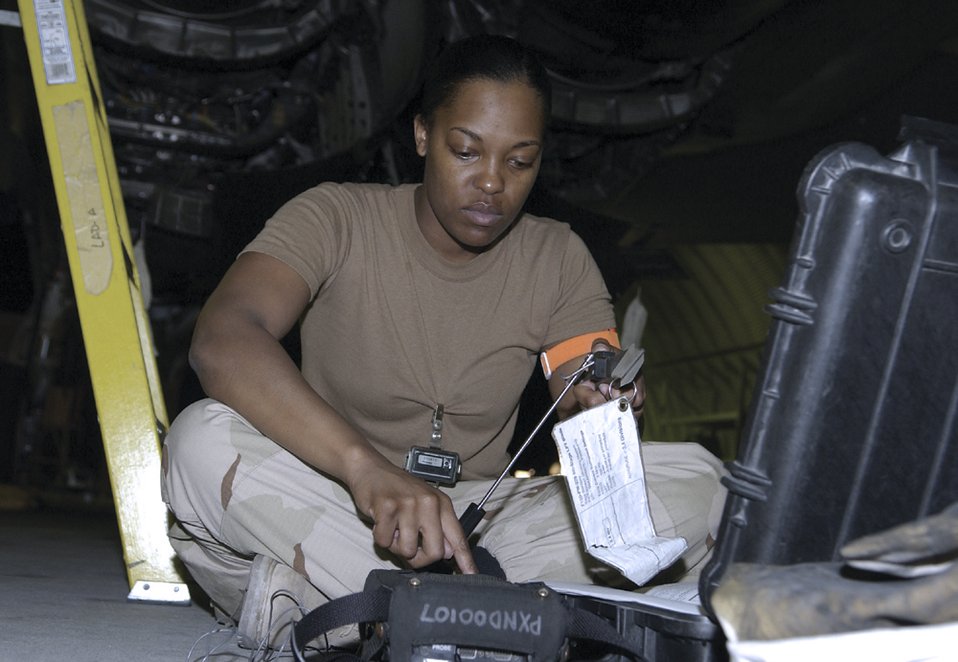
NDI Airmen play big part in mission

SOUTHWEST ASIA -- Senior Airman Kenda Lewis checks for cracks in an F-15 Eagle engine using an Eddy current tester. She is assigned to the 379th Expeditionary Maintenance Squadron's nondestructive inspection lab at a forward-deployed location and is from Royal Air Force Lakenheath, England.